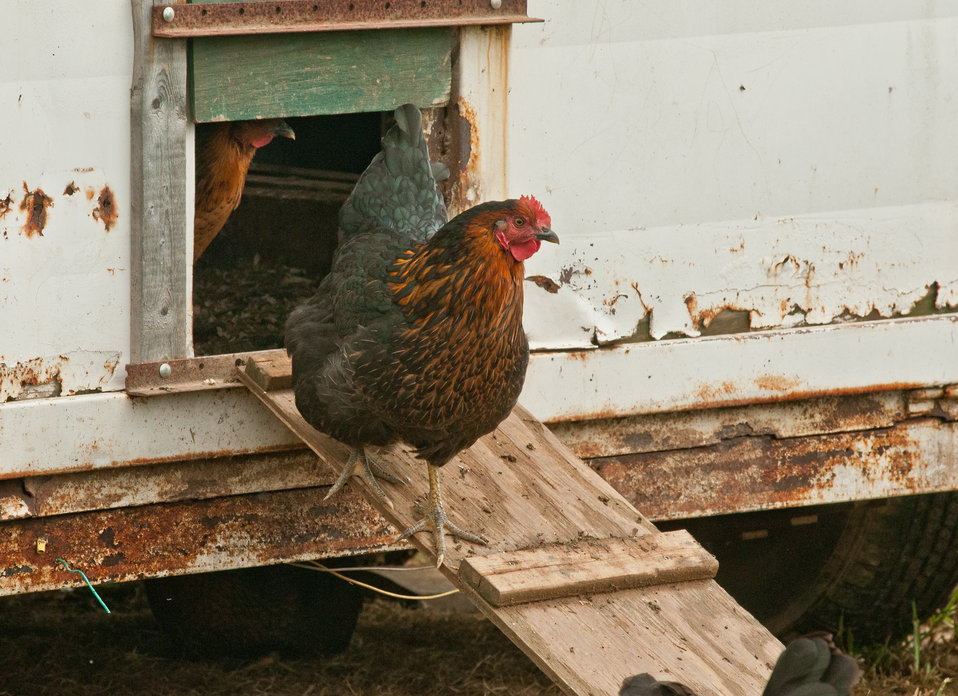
Laying hens freely enter and exit discarded horse trailers have been repurposed as safe sturdy mobile coops that can be easily relocated on Nick’s Organic Farm, in Adamstown, MD, on Friday, July 12, 2013. The farm, owned by Nick Maravell, produces Black Angus beef, chicken, turkey, eggs, hay, soybeans, corn, alfalfa, orchard grass, rye; and other crops. The cattle are100% grass-fed receiving certified organic pasture, certified organic hay (in winter), water and mineral salts mixed with sea kelp. The cattle are not fed hormones, antibiotics or animal products. Poultry feed from grain is ground from organic grain. The poultry also graze on organic pastures. The farm has conducted on-farm research with federal, state and non-profit agencies to refine organic practices. An organization such as the U.S. Department of Agriculture (USDA) Agricultural Research Service (ARS) center in Beltsville has been able to conduct research to improve organic crops and to breed and manage the cattle so that they have.